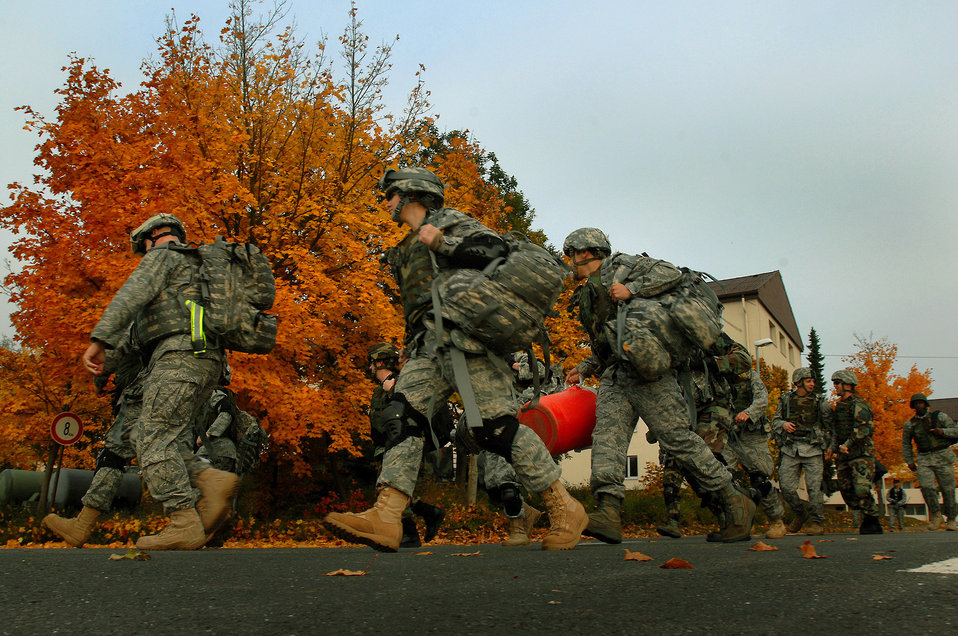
Let's follow the leader

Security Forces members from around the U.S. Air Forces in Europe command hustle to their next training station during a week-long Creek Defender course Oct. 10 at Sembach Annex, Germany. The course covers an array of tactical training methods.